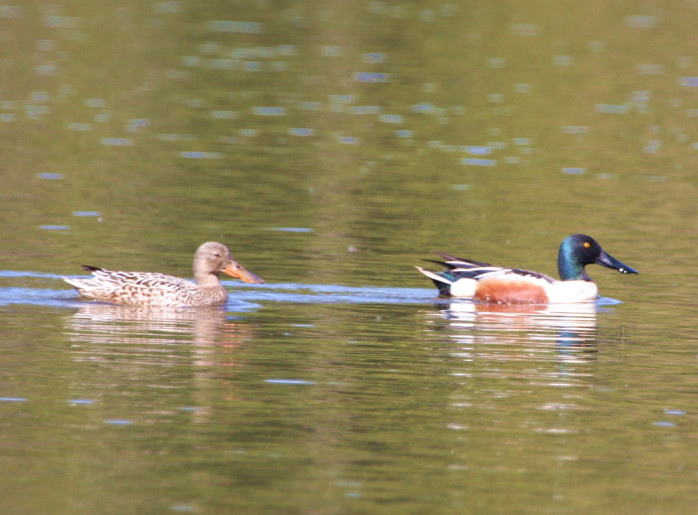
Northern Shovelers (Anas clypeata)

Northern Shoveler (Anas clypeata): “Spoonies” have a bill that probably no other duck would want to have. It is broad, flat, and disproportionately large. Longer than their head, it gives the bird a top heavy, ungraceful appearance. But, out of all the ducks, it is the most proficient top feeder when its dinner time. By submerging its spoon like bill in the water and using its comb-like teeth in the bill it can filter large quantities of tiny food particles. The shoveler’s distribution is wide throughout North America, Europe and Asia. The duck’s nesting range in North America is confined to the uplands of the northern states, the prairies and marshes of western Canada and up into central Alaska. Shovelers are fair weather fowl who dislike the cold in favor of warmer climates. Even before the first hint of snow they have their bags packed and head south, along with teal, headed for Mexico and other southern states. They are not impressive fliers but they are strong; one of the few that can make it to Hawaii from Alaska nonstop.